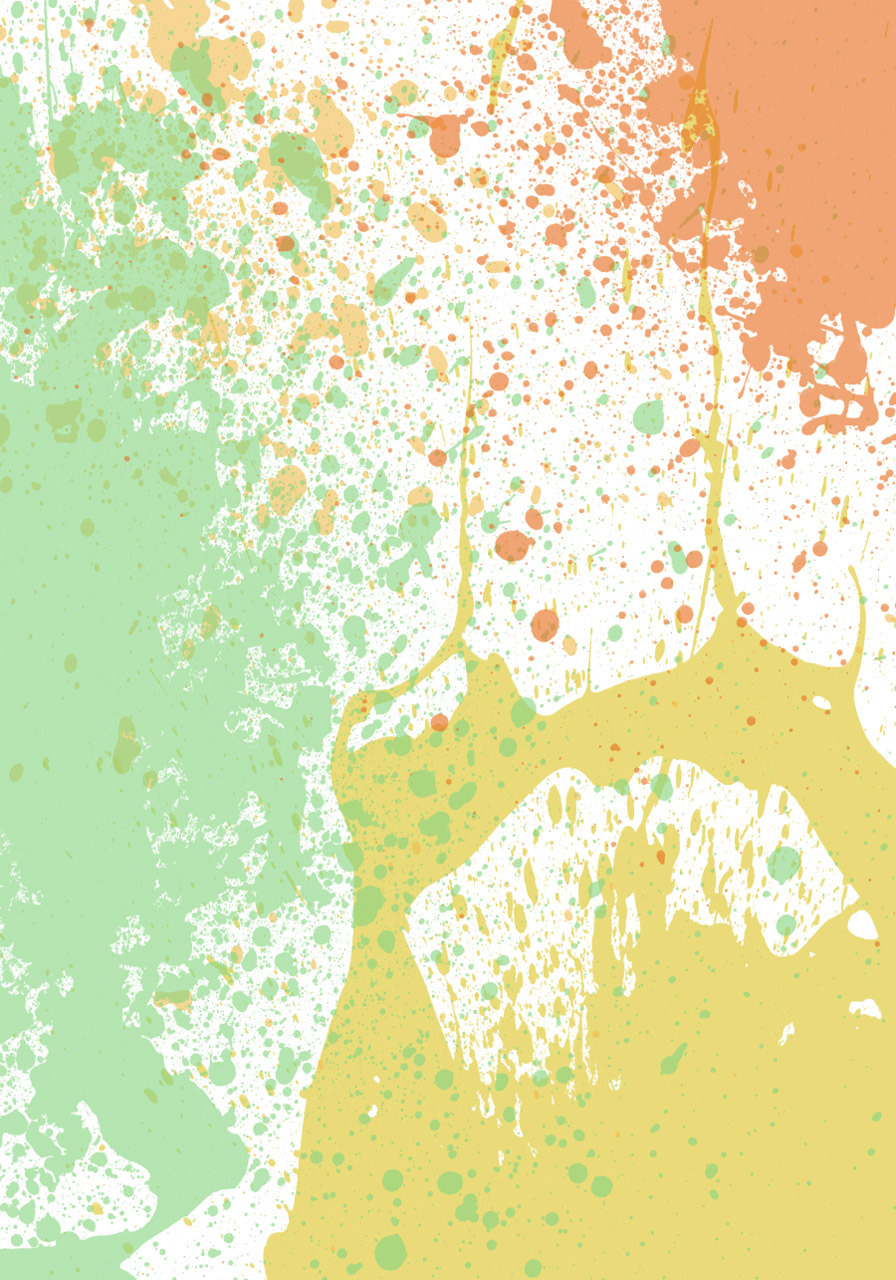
Splatter background

Paint splatter background.